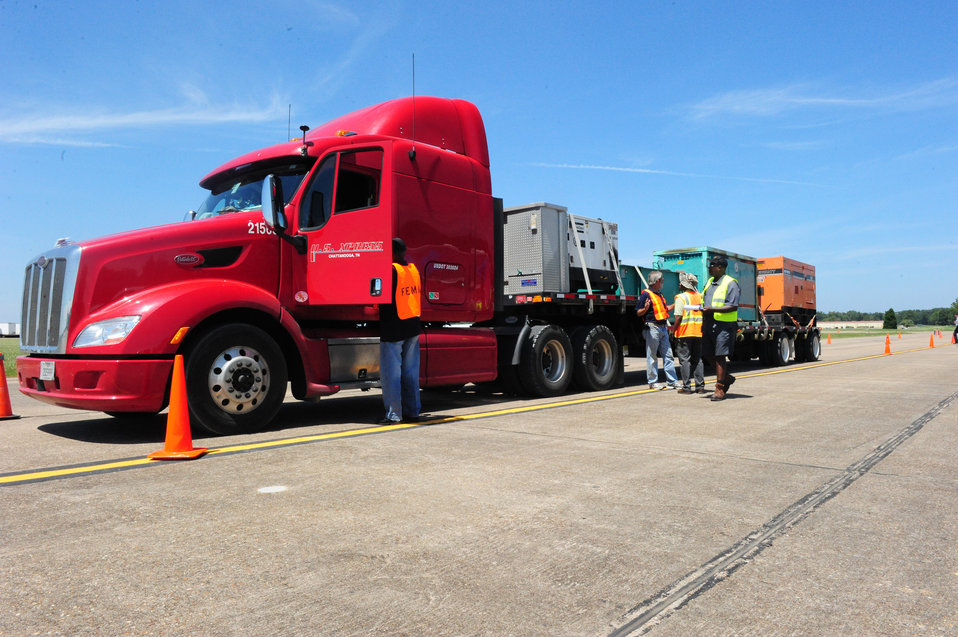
Maxwell, FEMA prepare relief supplies for Tropical Storm Isaac

Maxwell Air Force Base hosts Federal Emergency Management Agency trucks and generators waiting to assist areas in the Southeast effected by Tropical Storm Isaac, Aug. 27. Beginning Saturday, more than 120 semi-trucks filled with water, food, medical equipment, blankets, cots and generators big enough for hospitals began flowing into the base.